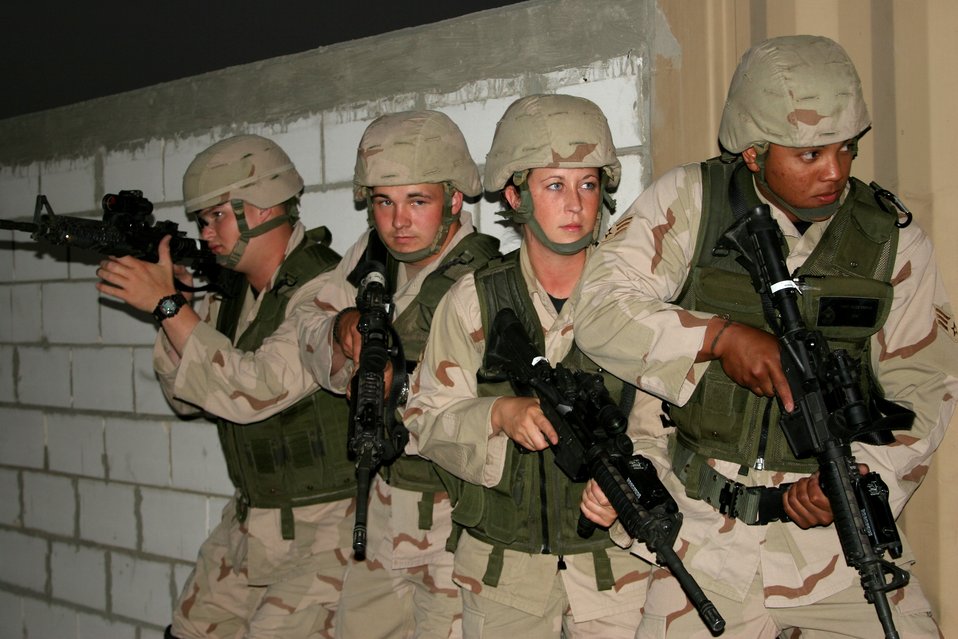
Mission of security forces constantly evolving

(From left) Senior Airman Christopher Blair, Airman 1st Class Kendal Hudson and Senior Airmen Ravin Coulon and Paris Carman prepare to move into a building during